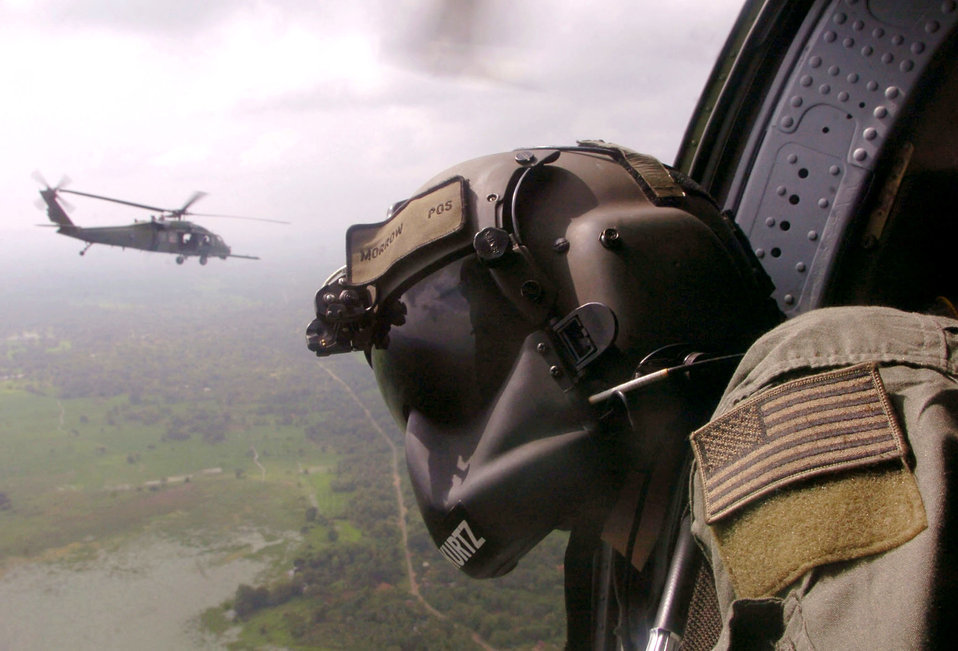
Scanning the sky

OVER SRI LANKA -- Senior Airman Matt Morrow scans the Sri Lankan horizon during tsunami relief operations here. His HH-60G Pave Hawk helicopter delivered supplies and equipment to various relief distribution centers. Airman Morrow is an aerial gunner from the 33rd Rescue Squadron at Kadena Air Base, Japan, supporting Operation Unified Assistance.